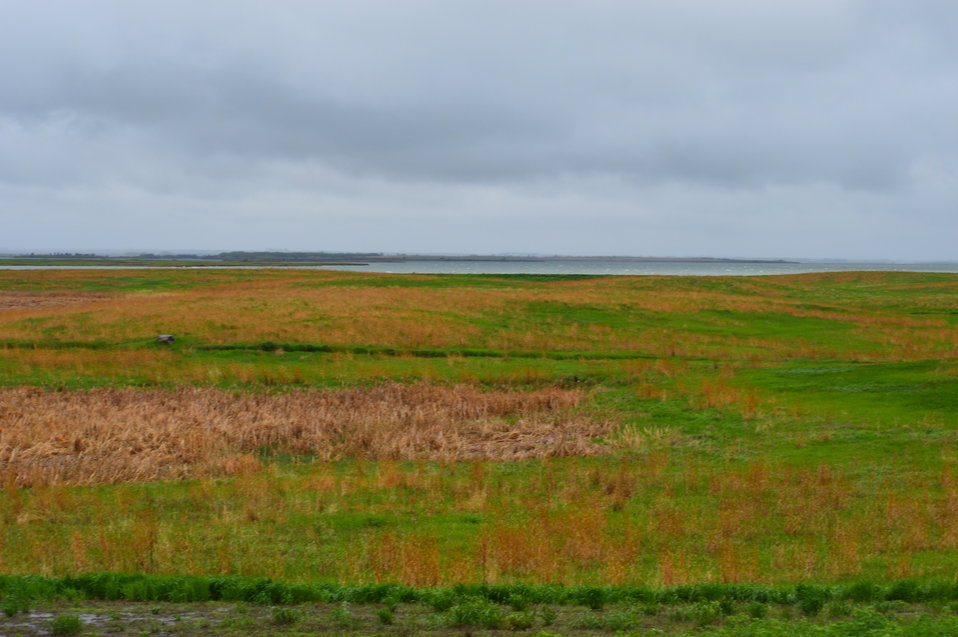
Prairie landscape

Scenery and wildlife and Audubon National Wildlife Refuge in North Dakota.